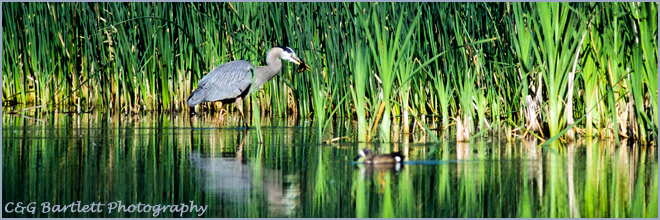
Great blue heron - Toppenish NWR

Great blue herons nest annually on the Toppenish NWR.